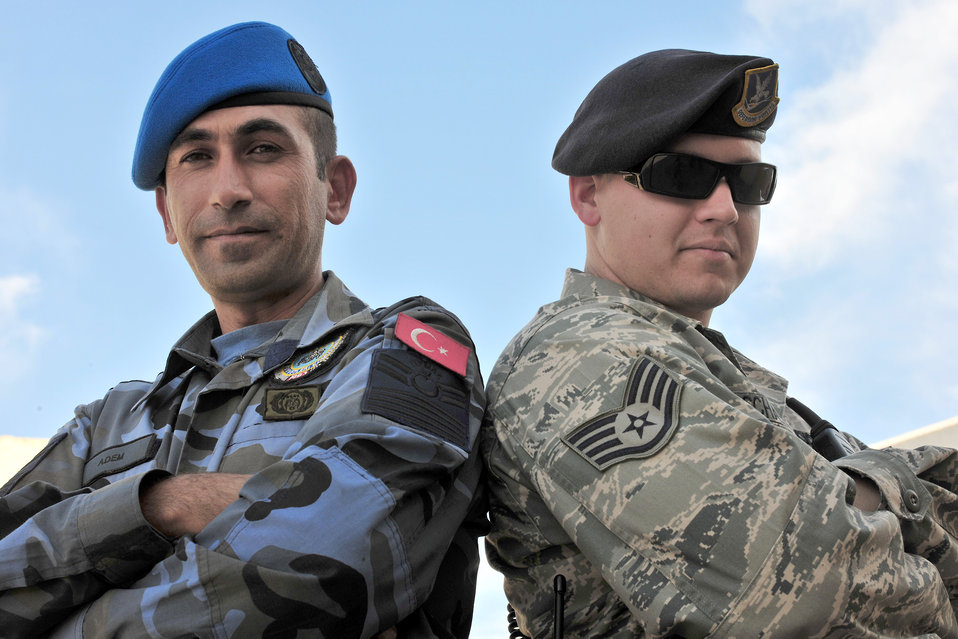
Turkish, American partnership keeps Incirlik AB safe

A Turkish Air Force Security Forces patrolman, (left) and Staff Sgt. Ryan Schaefer (right) work as a team during a joint patrol Oct. 22, 2010, at Incirlik Air Base, Turkey. Patrolmen are in charge of performing random security checks on assigned buildings, responding to emergency calls and safeguarding the base. Sergeant Schaefer is assigned to the 39th Security Forces Squadron.